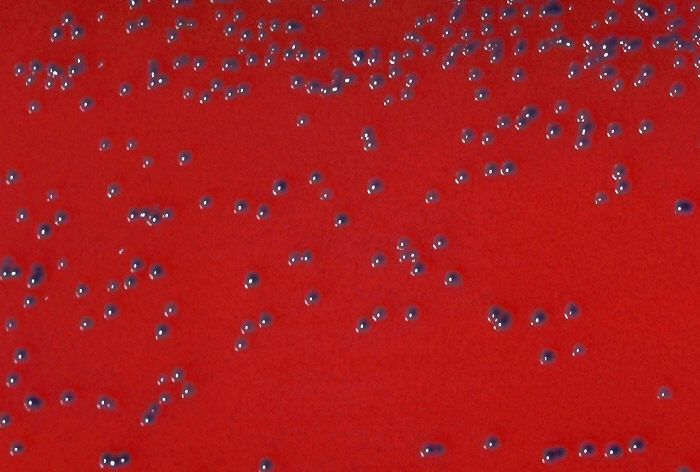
Blood agar plate culture of Corynebacterium diphtheriae mitis.